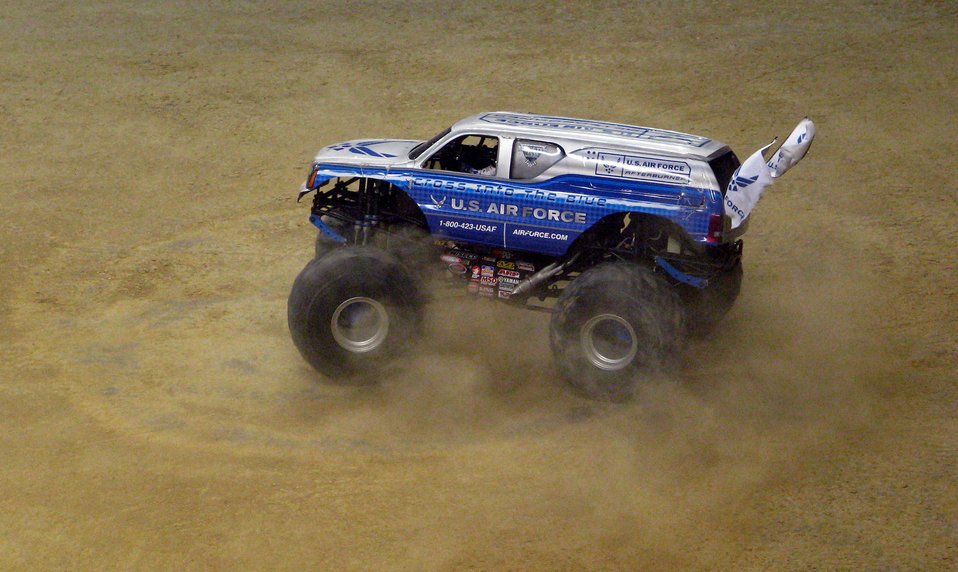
Afterburner steals the show

Afterburner, the Air Force's monster truck, dazzles the crowd Jan. 13 by doing donuts during the freestyle show at the 2008 San Antonio Monster Jam. Afterburner, an Air Force recruiting tool, is driven by Damon Bradshaw.